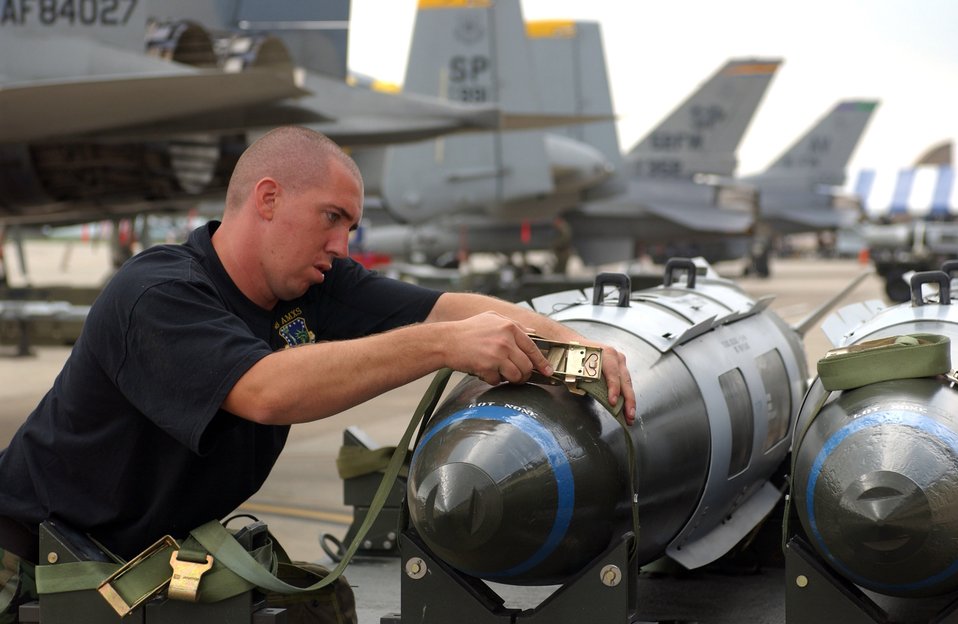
Sure Fire

SPANGDAHLEM AIR BASE, Germany -- Senior Airman Kevin Rayburn competes in the Sure Fire Load Competition on Aug. 24. Airman Rayburn is assigned to the 48th Aircraft Maintenance Squadron at Royal Air Force Lakenheath, England.